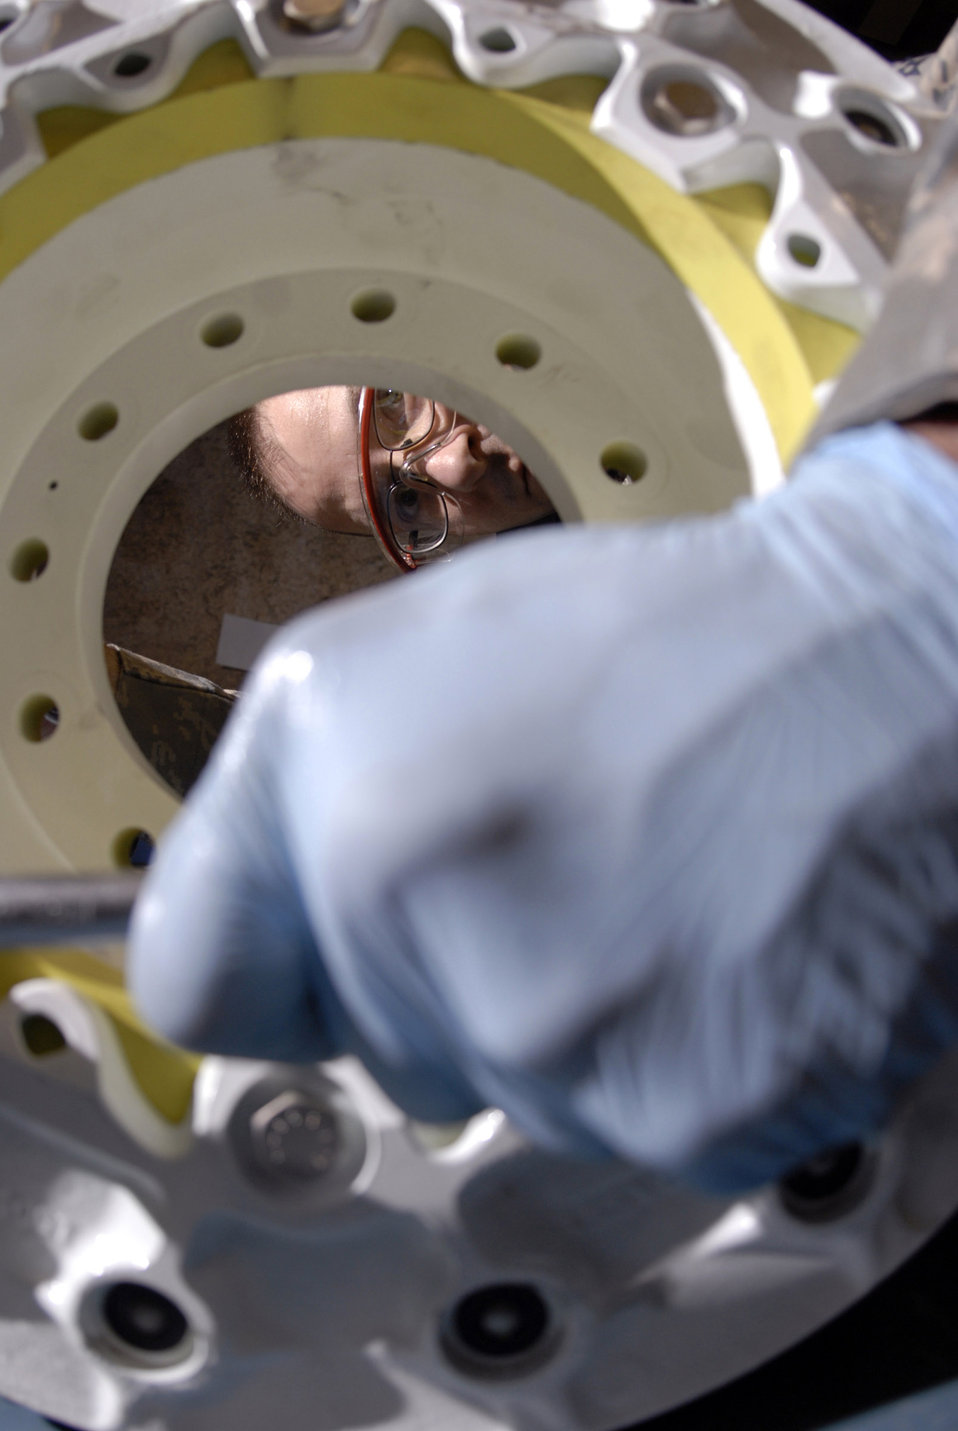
Take a brake

Tech. Sgt. Wayne Birk tightens the bolts on a KC-135 Stratotanker steel brake assembly April 17 at an air base in Southwest Asia. Sergeant Birk is the 379th Expeditionary Maintenance Squadron hydraulics shop chief, and is from Brockton, Mass.